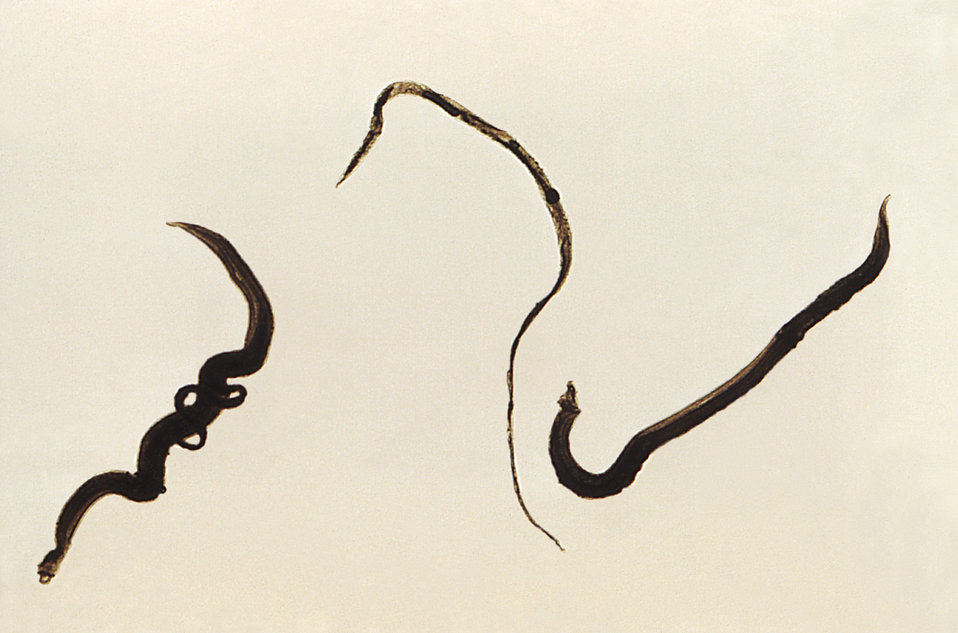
This magnified view reveals four Schistosoma mansoni trematodes. At the far left is a pair of worms, where the thinner female is cradled inside the thicker male worm's gynecophoral canal. In the center is a single thin female worm, and at far right is the more robust, thicker male S. mansoni.